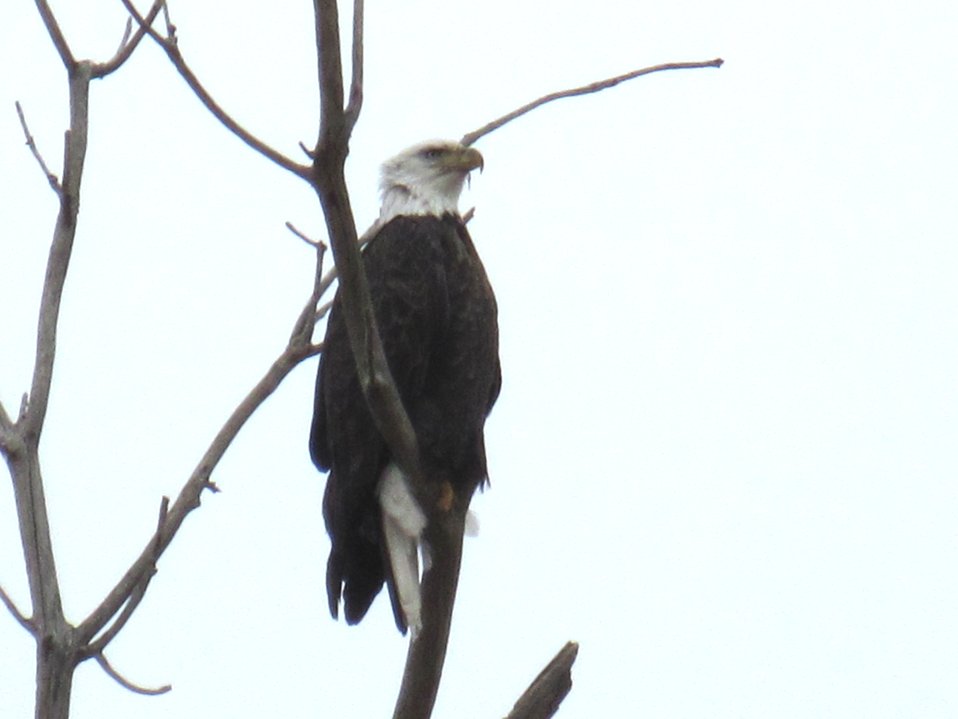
Bald Eagle at Big Salt Marsh

Upwards of 200 or more bald eagles may visit Quivira National Wildlife Refuge in Kansas during the winter months.